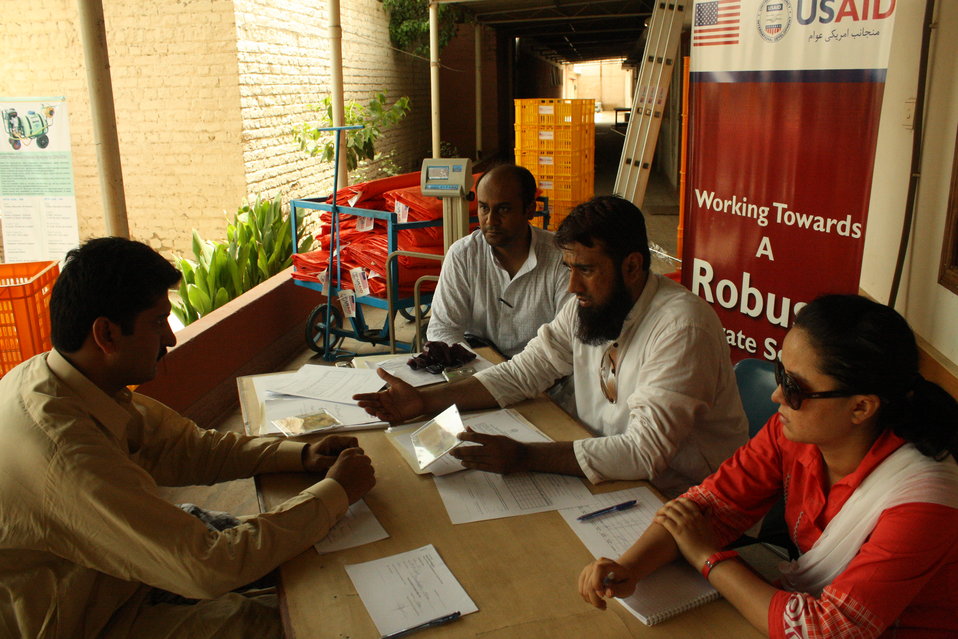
USAID Firms Project is striving to increase the economic value of Pakistani dates through wastage reduction at the date farm small and medium enterprise (SME) level and date processor SME level.